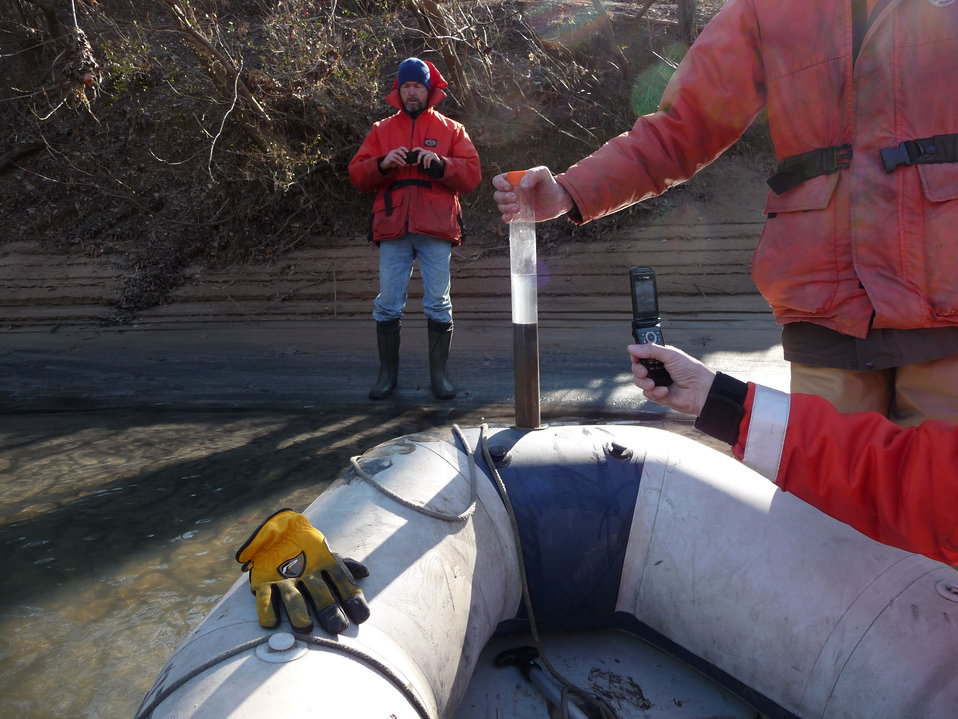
Sampling at coal ash spill on the Dan River

Tom Augspurger, USFWS, taking core sample as EPA's Alan Humphrey documents the ash bar during February 8th reconnaissance of Dan River coal ash spill.